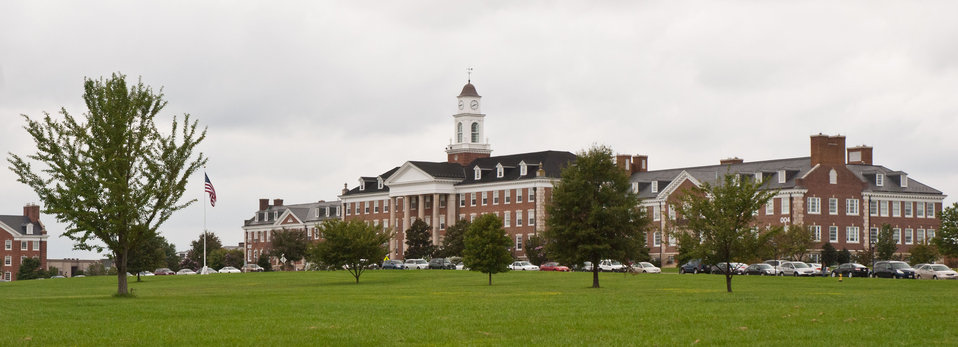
United States Department of Agriculture (USDA), Henry A. Wallace Beltsville Agricultural Research Center, landmark structures are buildings 002-004, and are home to numerous science institutes, in Beltsville, MD, on Wednesday, September 21, 2011.